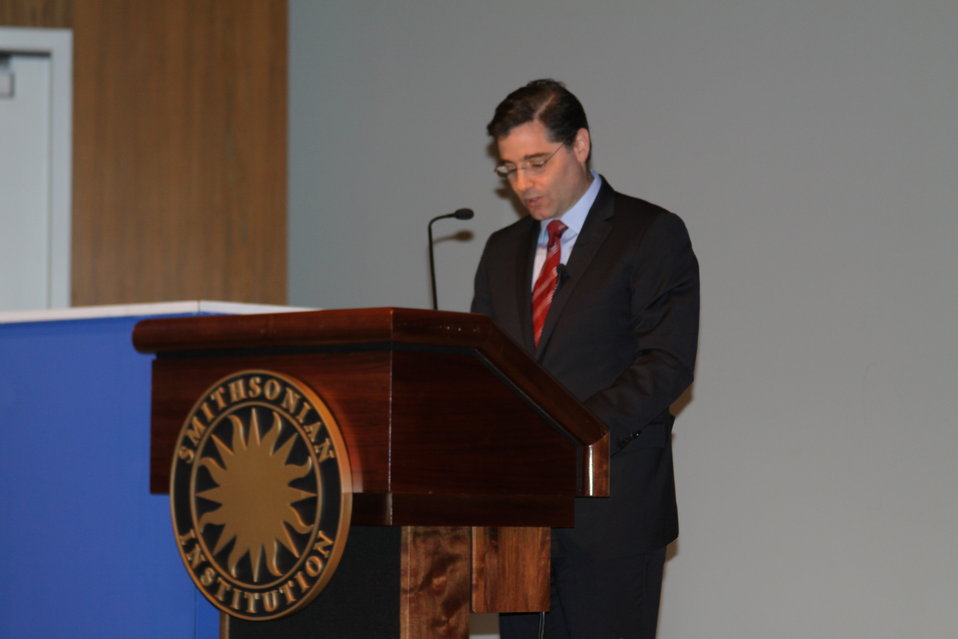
March 12, 2010- Smithsonian Broadband with Elmo